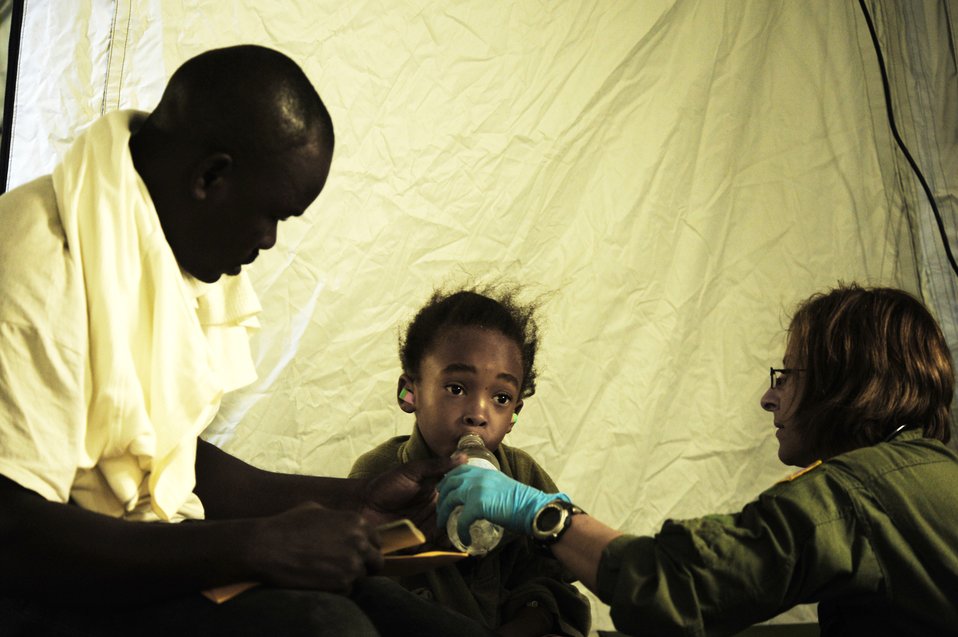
Operation Unified Resposne

A 6-year-old Haitian boy is given water by a medical technician Jan. 19, 2010 at the Toussaint L'Ouverture International Airport in Port-au-Prince, Haiti. The medical technician is assigned to the 1st Special Operations Support Squadron.